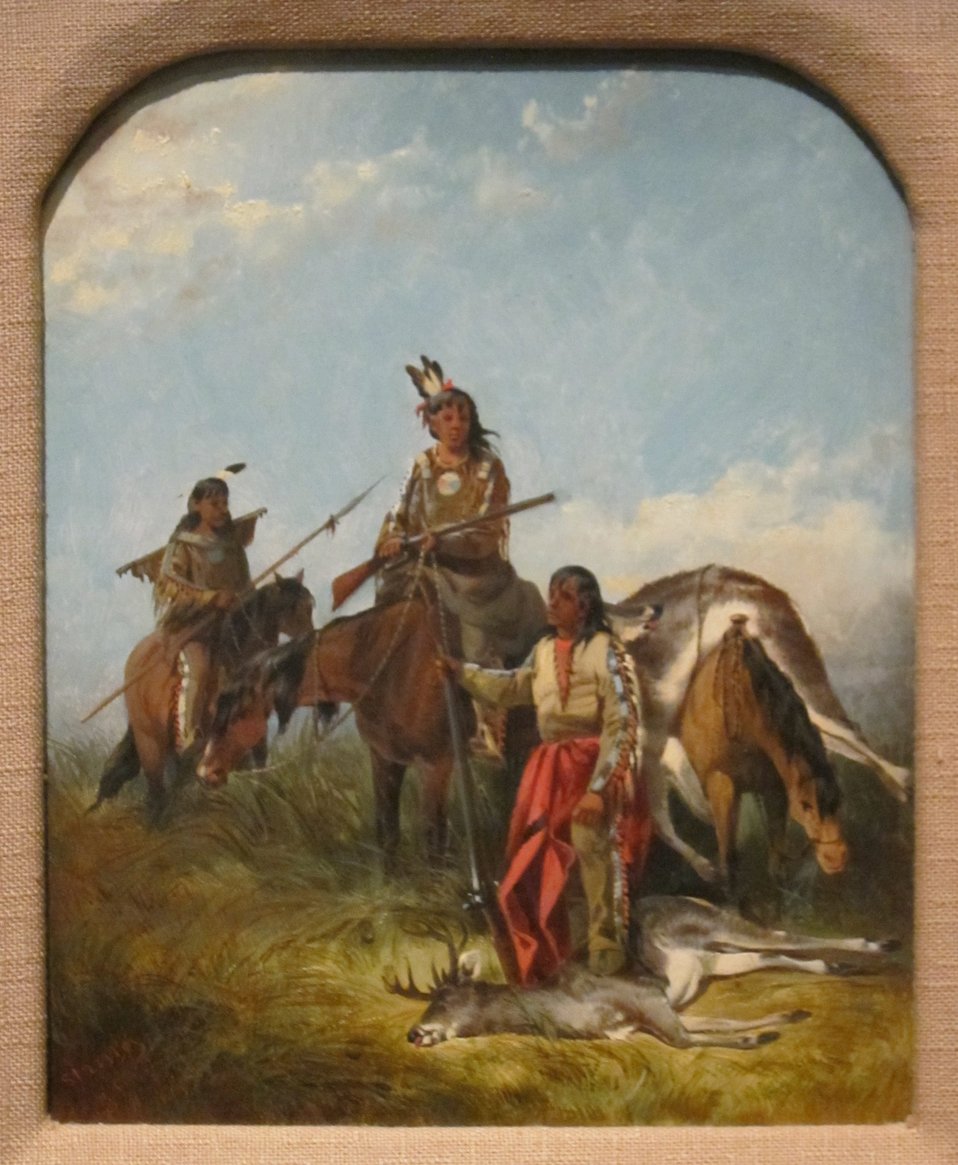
'Indians Hunting' by John Mix Stanley, Cincinnati Art Museum